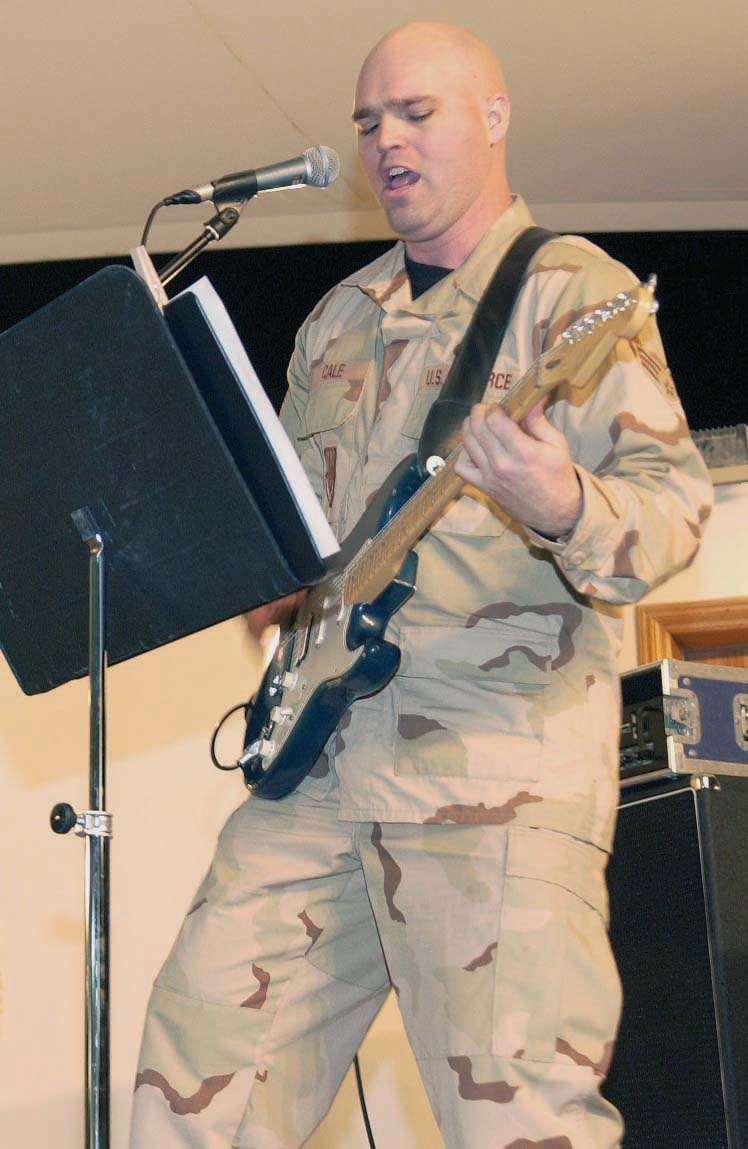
Blue Aces entertain deployed troops

SOUTHWEST ASIA -- Senior Airman Jason Cale performs Matchbox 20's song